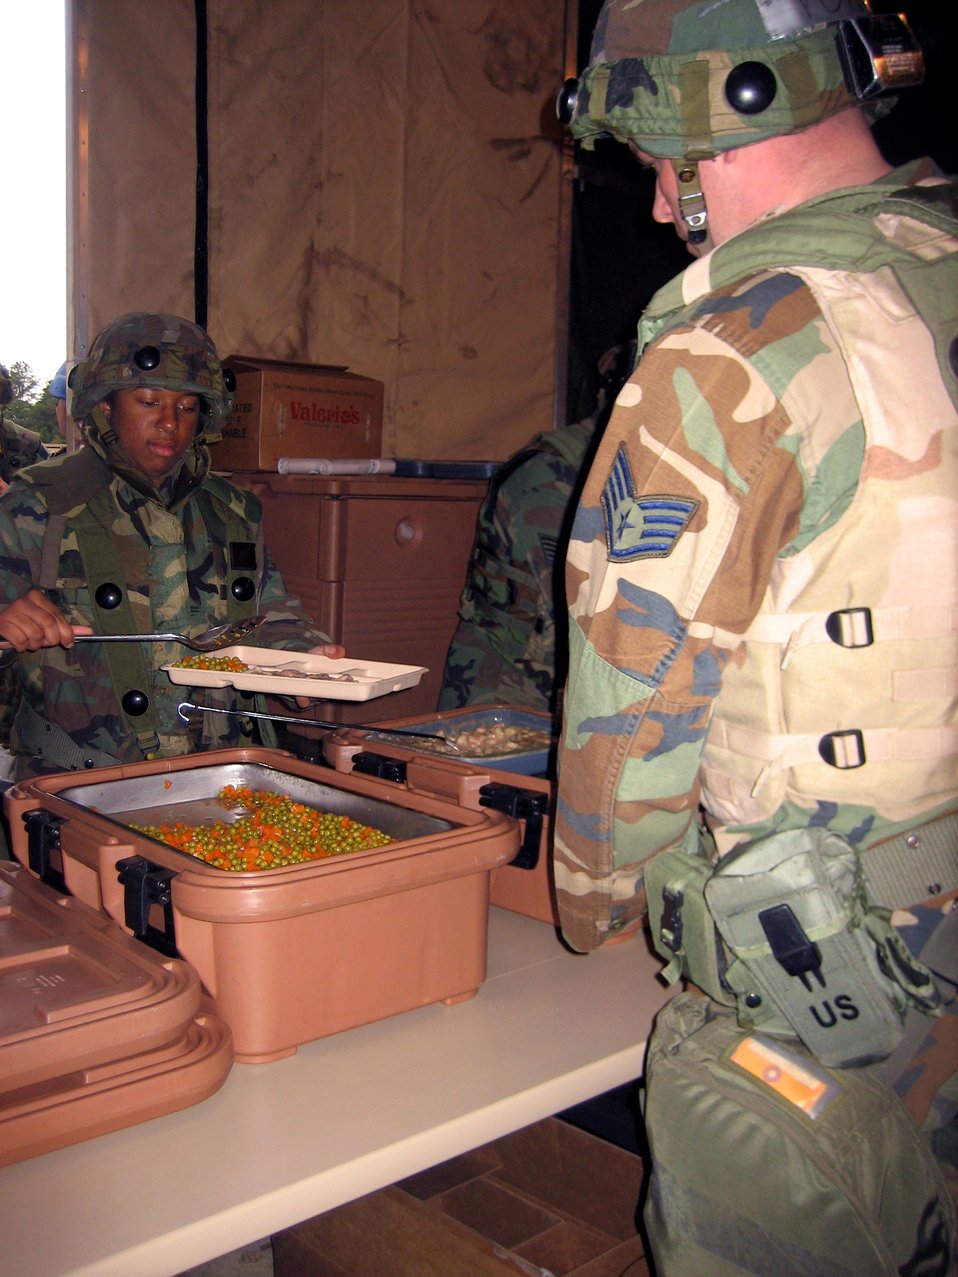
Services Airmen serve up real meals ready to eat

Services Airmen deployed to Air Force exercise Eagle Flag 07-4 serve up food to exercise participants April 25 during an evening meal at Naval Air Engineering Station at Lakehurst, N.J. Services members prepared the food in the Single Pallet Expeditionary Kitchen, or SPEK. During each Eagle Flag exercise, more than 30 services Airmen deploy to support the exercise operated by the Air Force Expeditionary Center's 421st Combat Training Squadron.